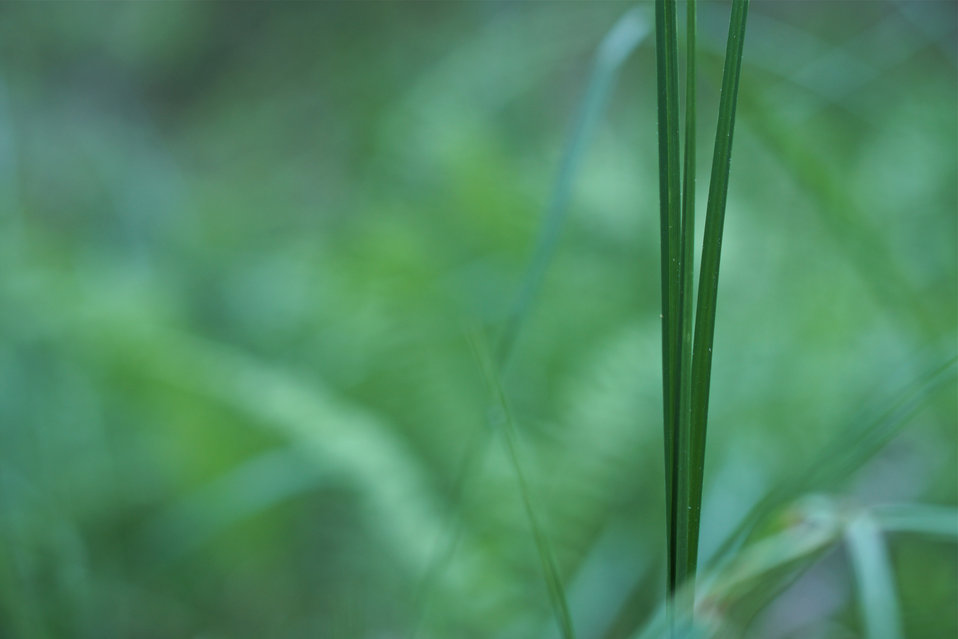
Trio of grass leaves

In May, bog conservationists from Tennessee, North Carolina, and Georgia convened in the north Georgia mountains for the spring, 2014 meeting of the Bog Learning Network. The event provided an opportunity for biologists to see, first hand, the result of management efforts at two north Georgia bogs. More importantly, the outings provided an opportunity to share innovative approaches to bog management, such as the role of the Georgia Plant Conservation Alliance in conserving rare plants and coordinating a cadre of volunteers to work on bog management.

The Bog Learning Network was convened in the winter of 2013 as a way to bring together people working for bog conservation across the Southern Appalachians. Southern Appalachian bogs are one of North America’s rarest habitats and home to many rare plants and animals.